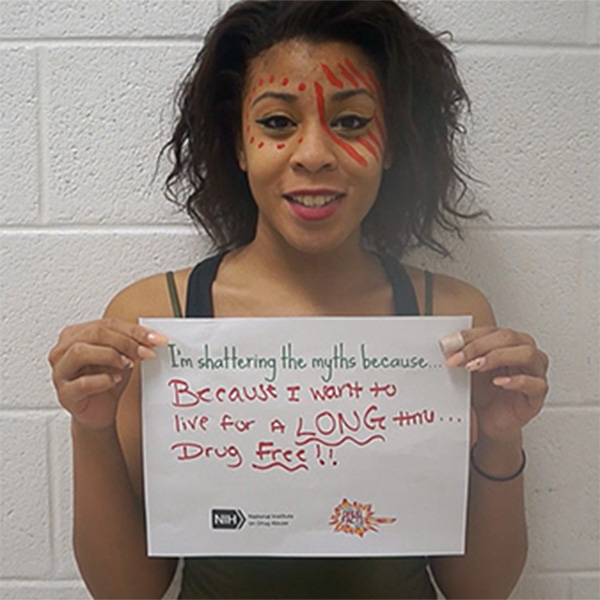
Drug Free

Camryn, 16 yrs., explains how she is 'Shattering the Myths' as she kicks off the 2014 NDFW. Camryn is a student from Ms. D’Anna’s 3rd period dance class from James Hubert Blake High School in Silver Spring, Md.